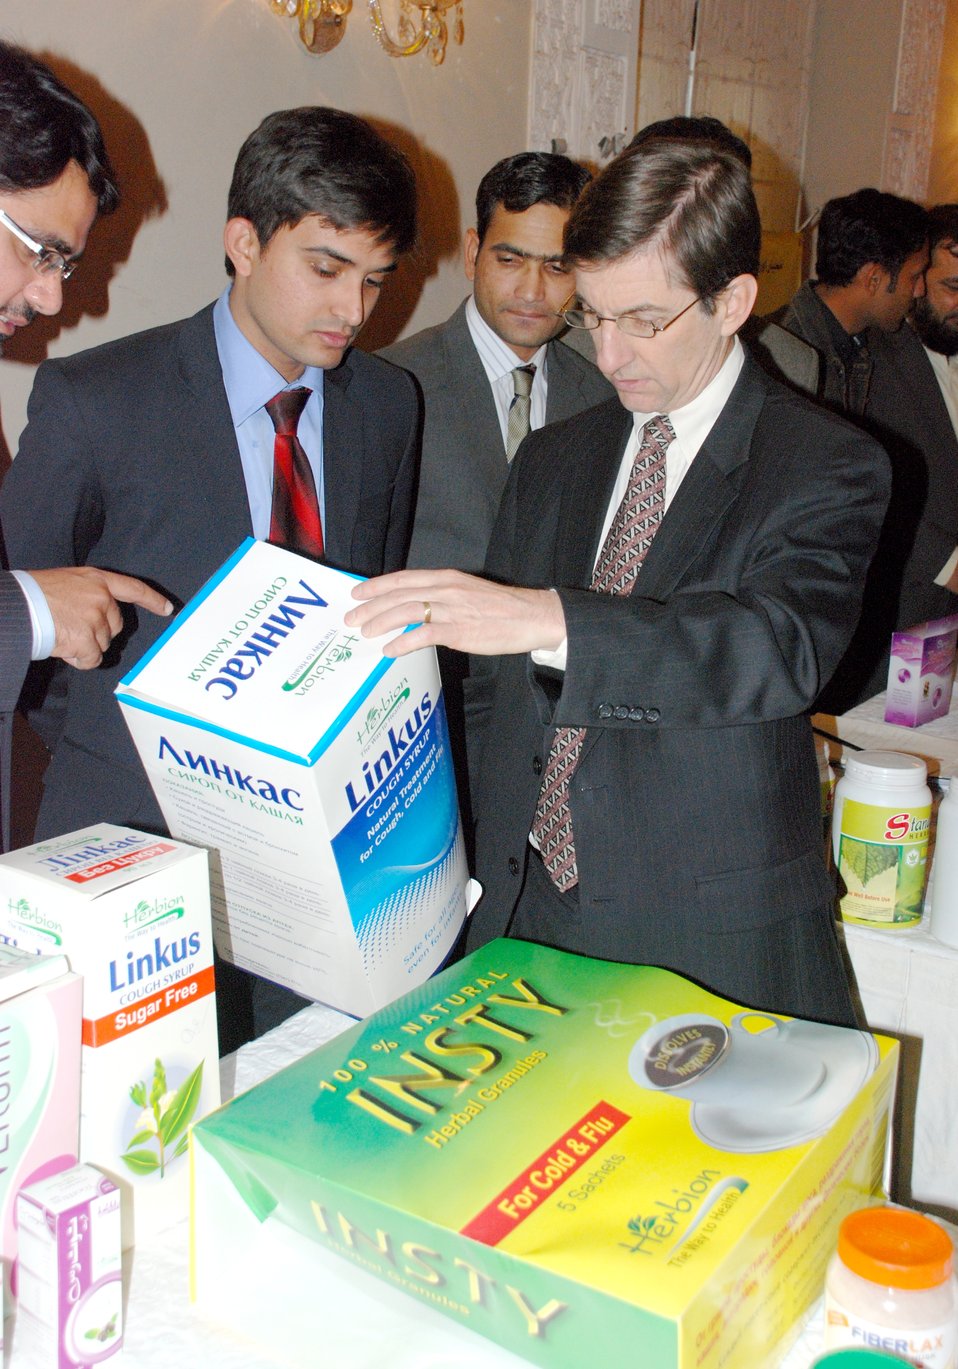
Industry Conference- Medicinal Plants and Honey

USAID Mission Director, Andrew Sisson talking to the Manufacturer of herbal medicines